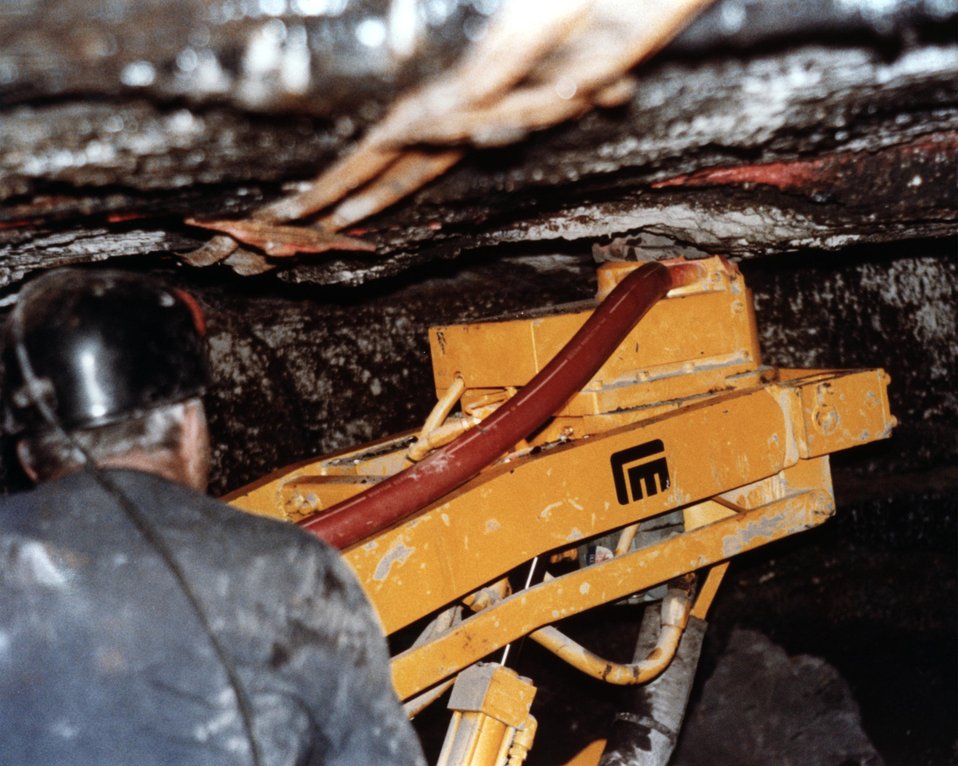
DRILL HEAD AND OPERATOR (UNDERGROUND).

THE PREDOMINANT UNDERGROUND MINING METHOD IN THE U.S. IS THE 'ROOM AND PILLAR' METHOD, A TERM DERIVED FROM THE MINING PATTERN OF A SERIES OF EXCAVATED AREAS (ROOMS) AND UNEXCAVATED AREAS (PILLARS) WHICH ARE LEFT TO SUPPORT THE ROOF. A MAJOR INCREASE IN PRODUCTION AND EFFICIENCY COULD BE ACHIEVED BY INTEGRATING THE ROOF SUPPORT AND EXTRACTION FUNCTION.